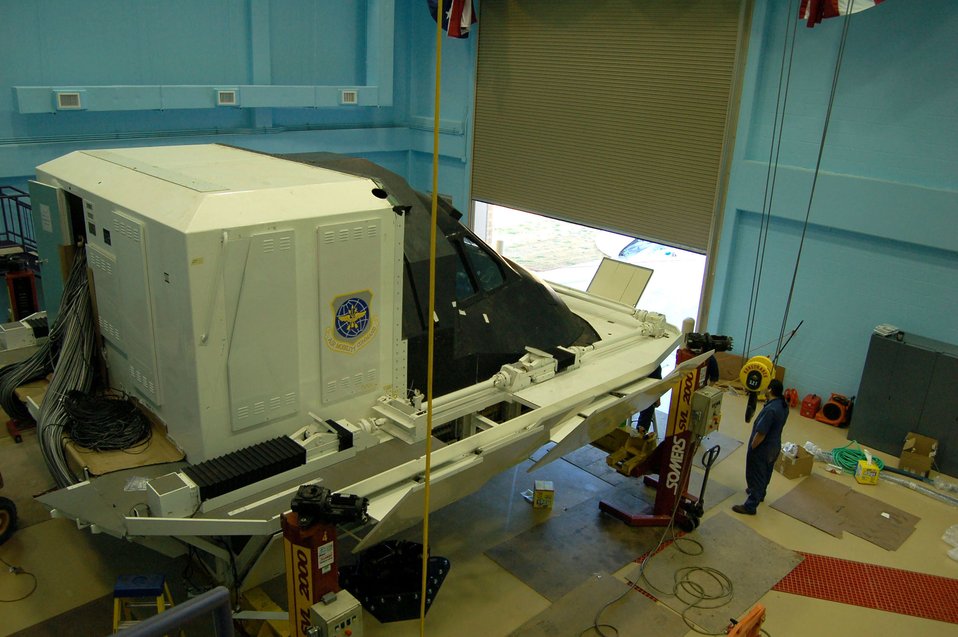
Alamo Wing steps up schoolhouse operations

Workers install a C-5 Galaxy flight simulator at the Air Force Reserve Command's 433rd Airlift Wing at Lackland Air Force Base, Texas. The 356th Airlift Squadron and 733rd Training Squadron joined the wing Feb 6, making it the Air Force's C-5 formal training unit. The wing's C-5 aircraft fly out of adjacent Kelly Field.